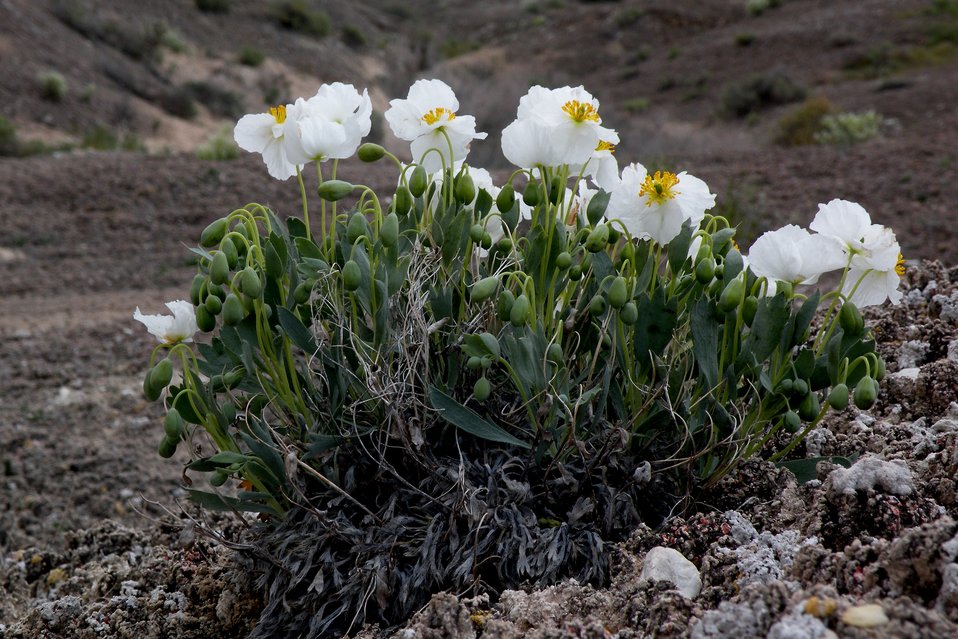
Dwarf bear poppy on the White Dome Nature Preserve area in Utah. The poppy is a globally rare and federally listed species.